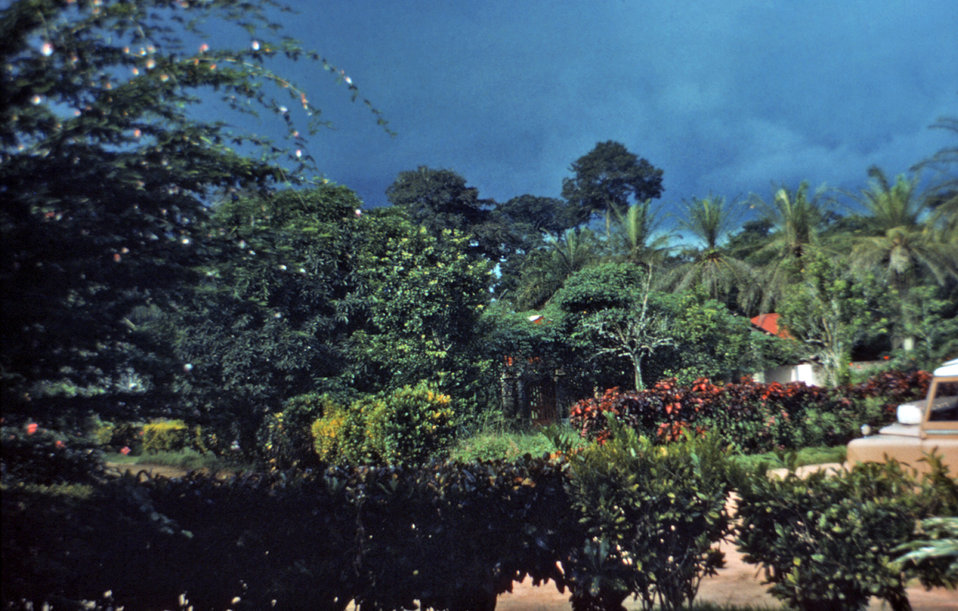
This photograph showed a Belgian mission hospital, covered by numerous trees. It was at this location that the first Ebola outbreak, drawing the attention of the western world, began in August, 1976.